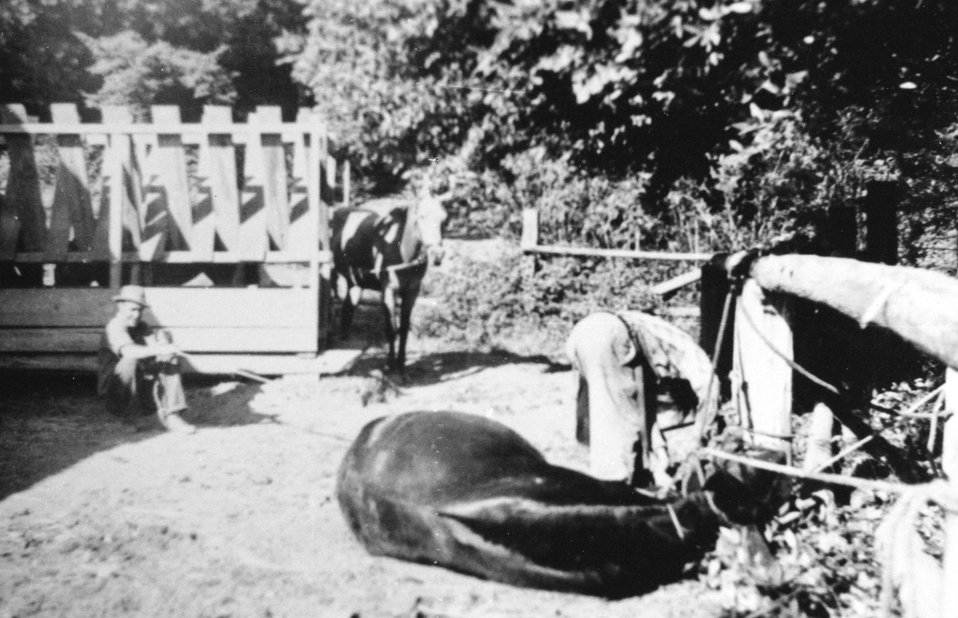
Leo Frye shoing a pack mule.